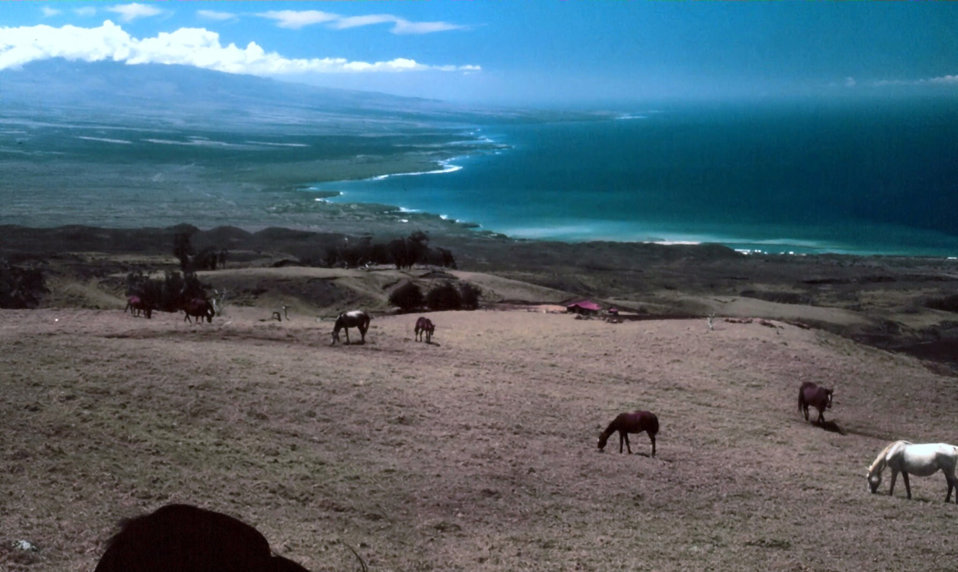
Horses in paradise - on the Parker Ranch.